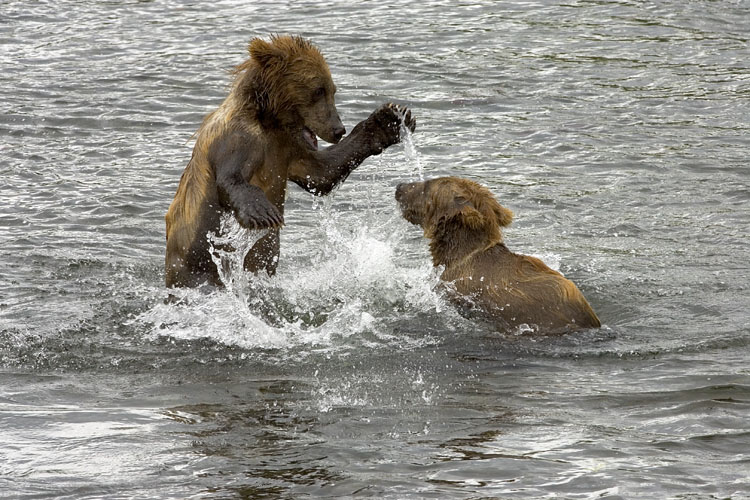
KOD Hildebrand (31)

Kodiak National Wildlife Refuge- Wildlife